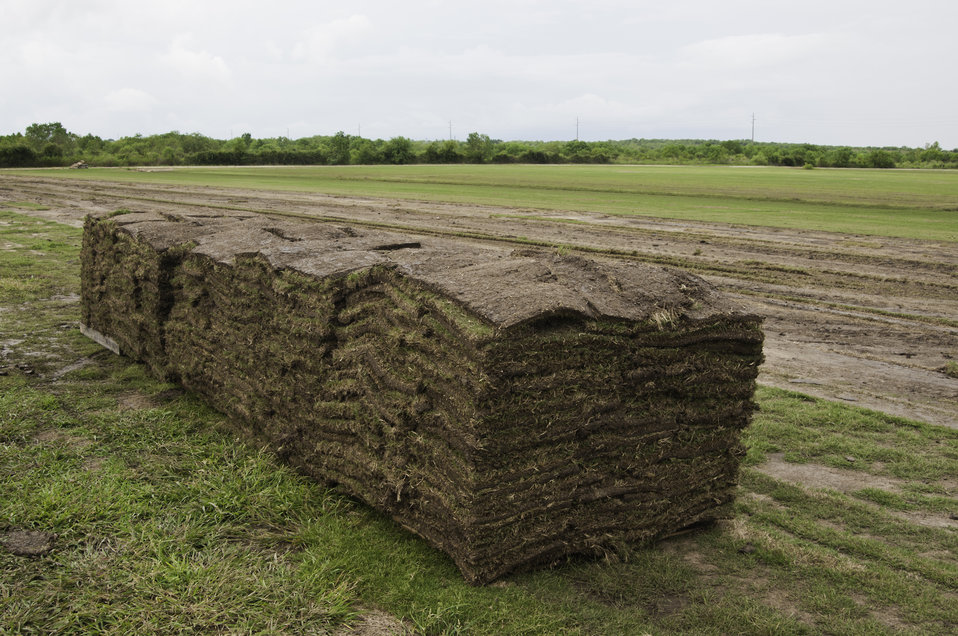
Sod used for landscaping is harvested on the Quality Turf Farms in Guy, TX on Aug. 23, 2013.